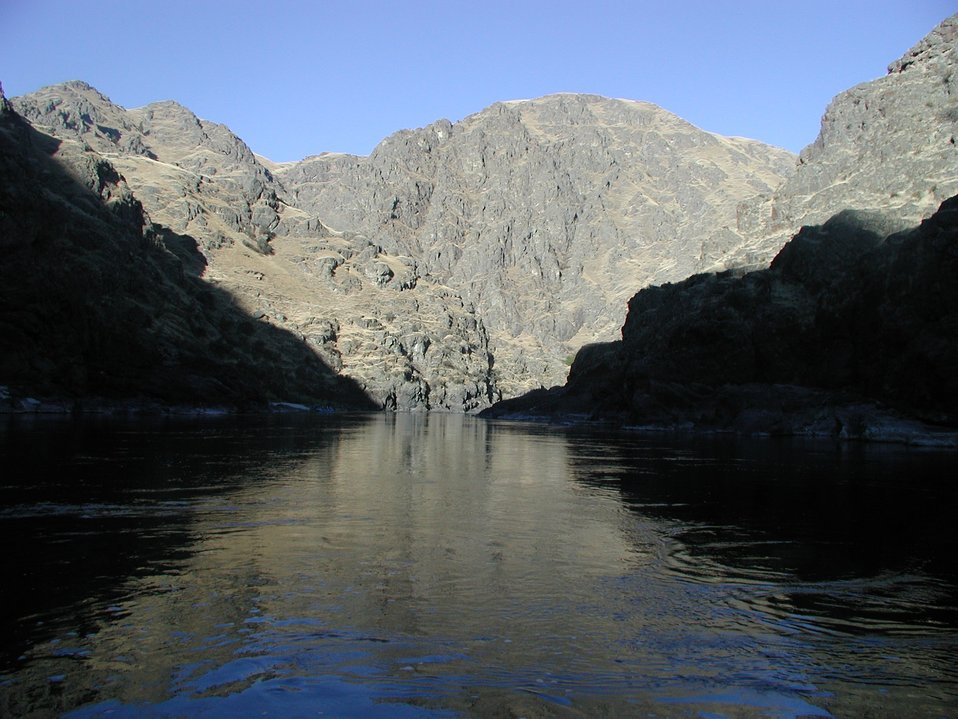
Scenic shot of Lower Salmon River Cottonwood Field Office UCSC Upper Columbia Salmon Clearwater District